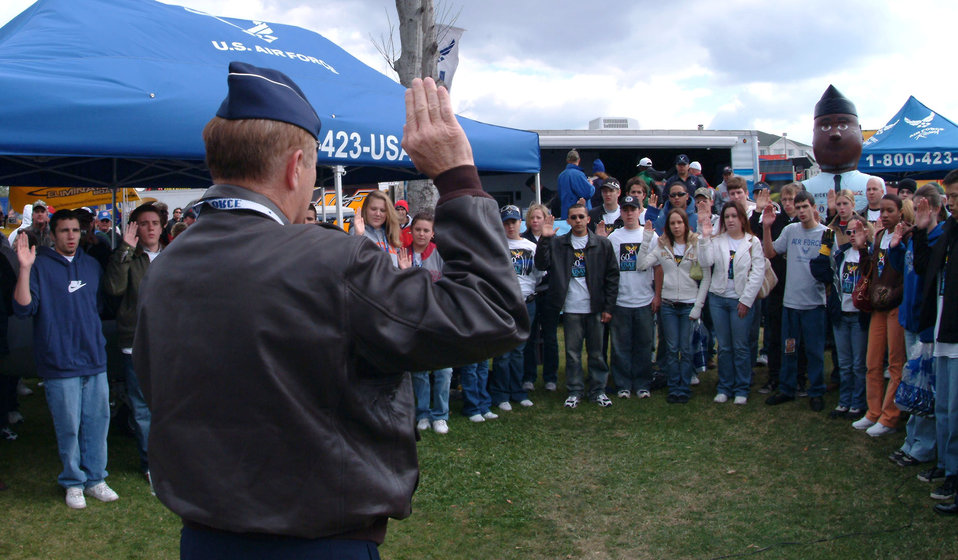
General swears in new Airmen at Daytona 500 race

Gen. Ronald Keys, Air Combat Command commander, gives the oath of enlistment Feb. 18 to 36 delayed-entry-program recruits from the local area before the Daytona 500 race in Daytona Beach, Fla. Afterward, the new Airmen and the general were treated to a tour of the garage and pit areas before the race. The Air Force is one of the sponsors of the No. 21 Wood Brothers car driven by Ken Schrader.